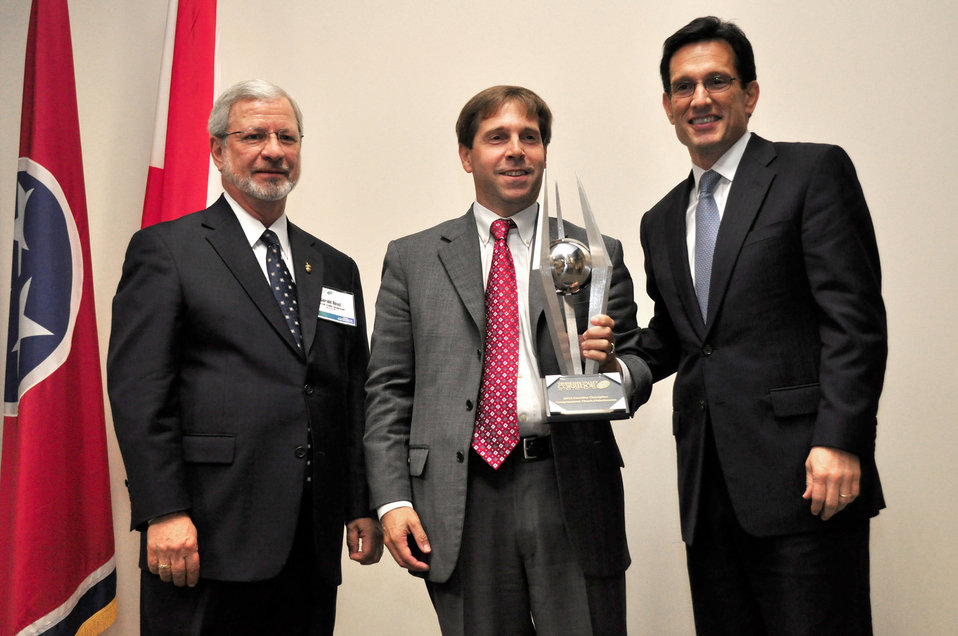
Tennessee Valley Corridor Summit L to R Gerald Boyd, Congressman Chuck Fleischmann, and Congressman Eric Cantor Majority Leader Oak Ridge

13-062 DOE photo Lynn Freeny 5-29-2013 Tennessee Corridor Champion Award to Congressman Chuck Fleischmann Oak Ridge Tennessee